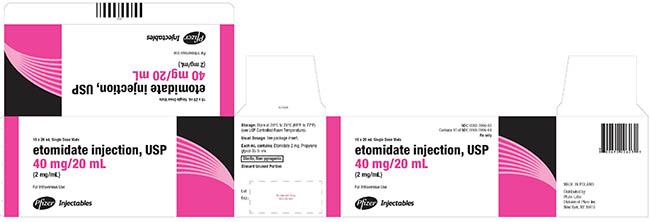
RECALLED – Etomidate Injection, 2mg/mL

February 19, 2014 – Product Recall – Agila Specialties Private Limited Initiates Voluntary Nationwide Recall of 10 Lots of Etomidate Injection 2 mg/mL – 10 mL and 20 mL due to the Presence of Particulate Matter and/or Illegible and Missing Lot Number and/or Expiry Date.